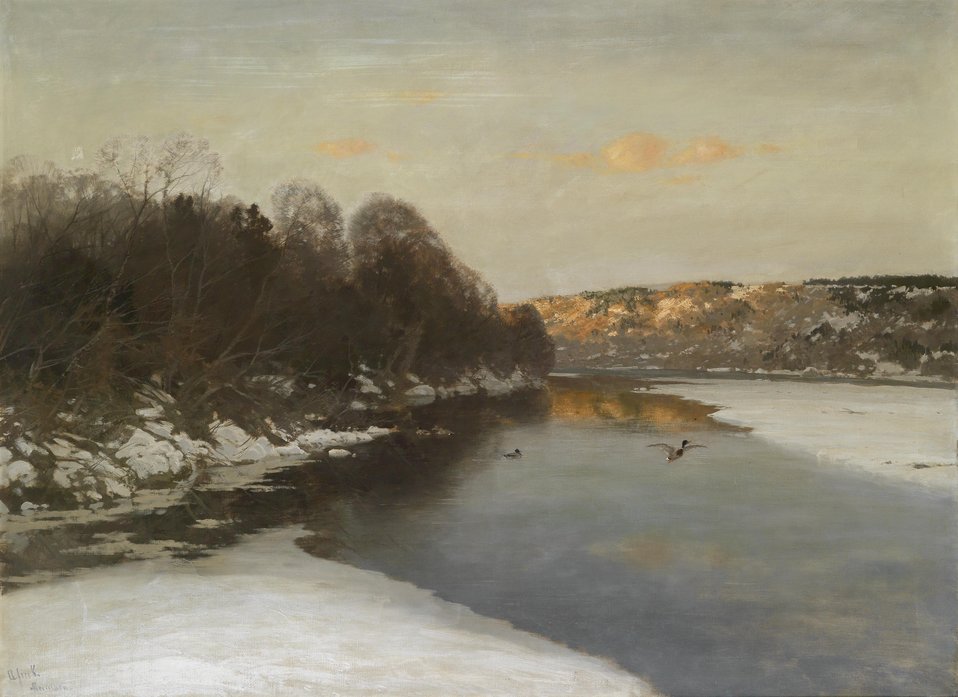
Enten am zugeforenen Fluss, signiert A. Fink, Öl auf Leinwand, 97 x 131 cm